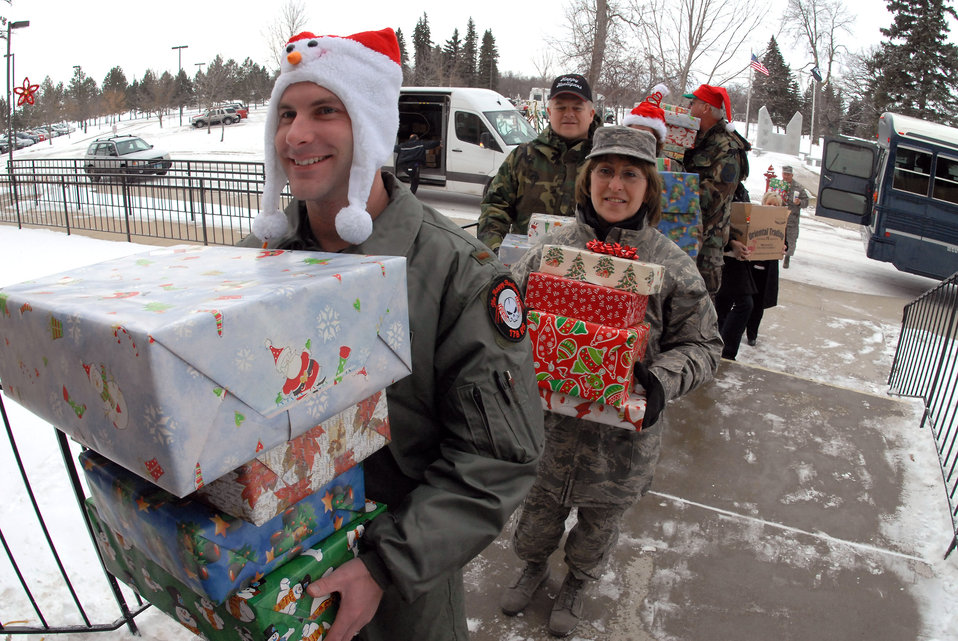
Airmen deliver Christmas

2nd Lt. Roy Thomsen and Chief Master Sgt. Paula Johnson carry Christmas gifts into the North Dakota Veteran's Nursing Home Dec. 10 in Lisbon, N.D. The gifts are given to veterans at the nursing home by the North Dakota Air and Army National Guard each December using funds raised through personal donations given by the North Dakota National Guard members. Lieutenant Thomsen and Chief Johnson are North Dakota Air National Guard members.